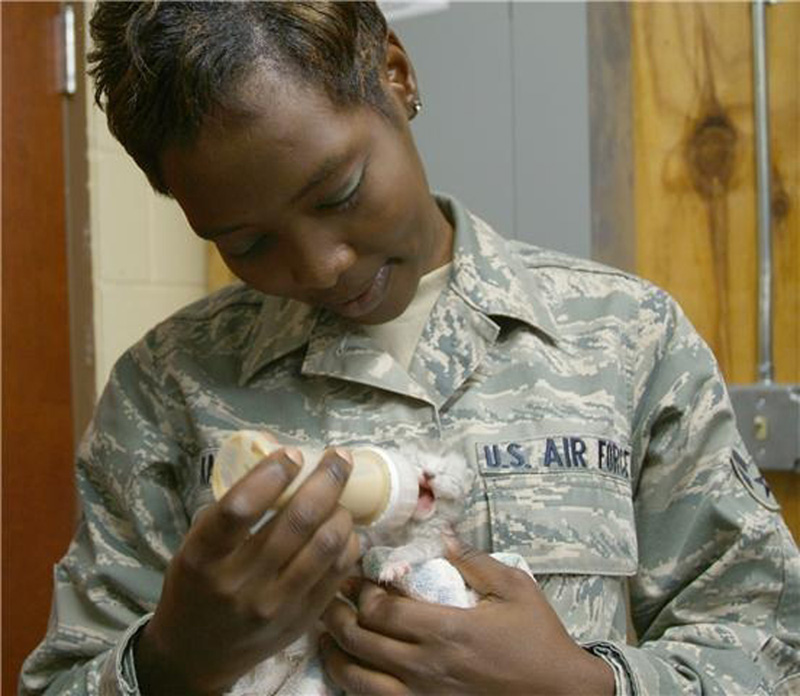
Airmen rescue kittens inside wall

Airman 1st Class Nadia Katana bottle-feeds a kitten that was cut out of a wall June 22 at Hurlburt Field, Fla. Members of the 505th Command and Control Wing cared for the litter of four until they were turned over June 23 to a wildlife refuge until they can be adopted.